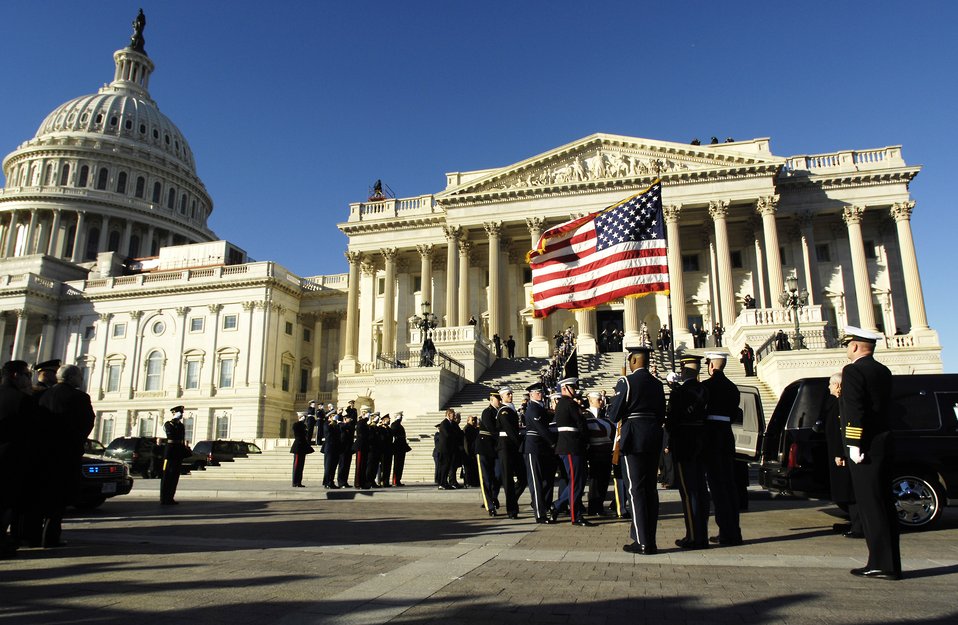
Leaving the Capitol

Servicemembers carry the casket of former President Gerald R. Ford from the U.S. Capitol in Washington, D.C., Jan. 2 en route to the Washington National Cathedral for a state funeral service.